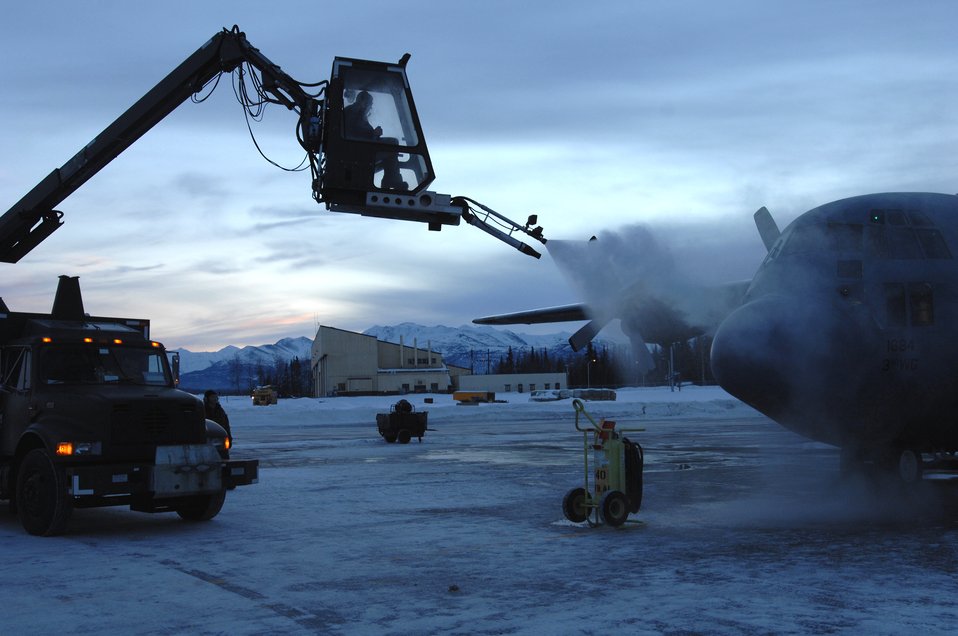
Baby, it's cold outside

Senior Airman Steven Ferrin de-ices a C-130 Hercules Feb. 15 before it takes off from Elmendorf Air Force Base, Alaska, on a training mission. Airman Ferrin is a crew chief for the 703rd Aircraft Maintenance Squadron and the C-130 belongs to the 517th Airlift Squadron.